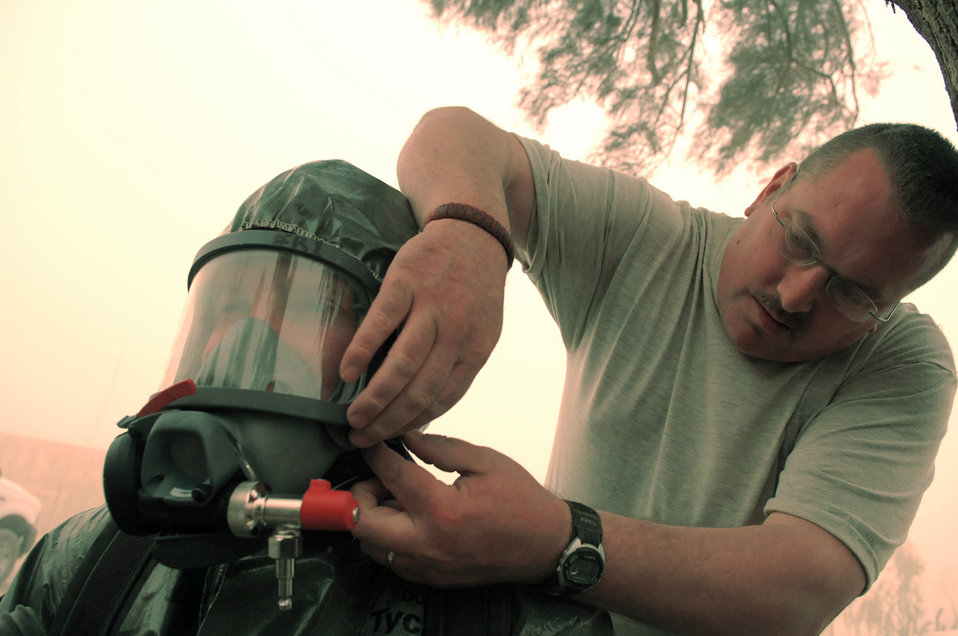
AOR emergency managers gather at Balad to hone skills

Master Sgt. Stephen Jakle helps Staff Sgt. Amber Albano put on her oxygen mask before she investigated an unknown powder substance during a training scenario at Balad Air Base, Iraq, April 17. The suits worn by the Airmen allow them to respond to real world situations and can protect against chemical, biological, radiological and nuclear materials. Being confident and comfortable with their equipment allows emergency managers to focus on the task at hand. Sergeant Jakle is deployed to the 407th Expeditionary Civil Engineer Squadron as an emergency manager at Ali Base, Iraq. Sergeant Albano is deployed to the 506th Expeditionary Civil Engineer Squadron as a emergency manager at Kirkuk Regional AB, Iraq.